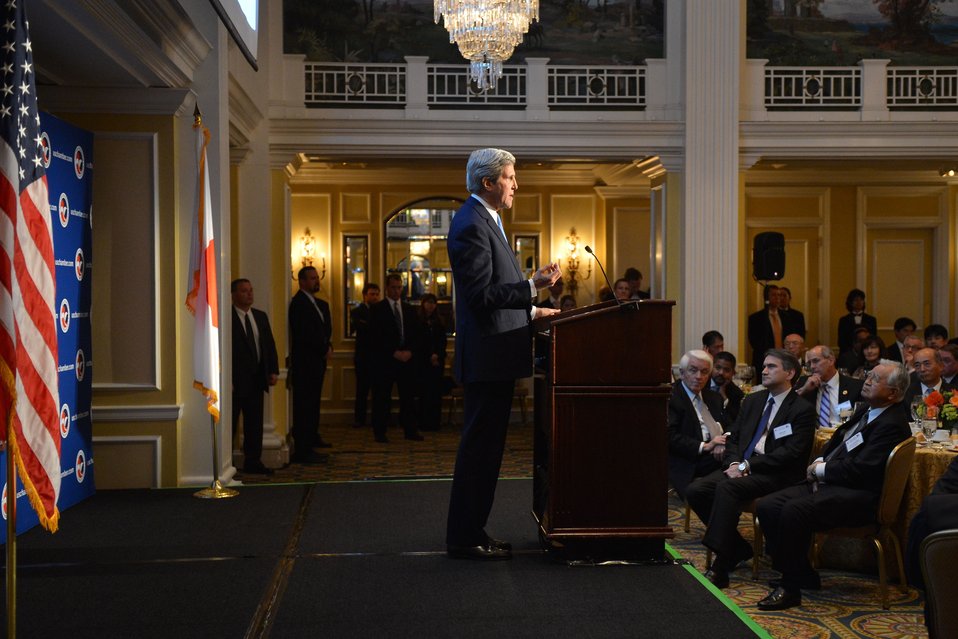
Secretary Kerry Delivers Remarks for the 50th U.S.-Japan Business Conference

U.S. Secretary of State John Kerry delivers remarks at a dinner for the 50th U.S.-Japan Business Conference in Washington, D.C., on November 14, 2013.